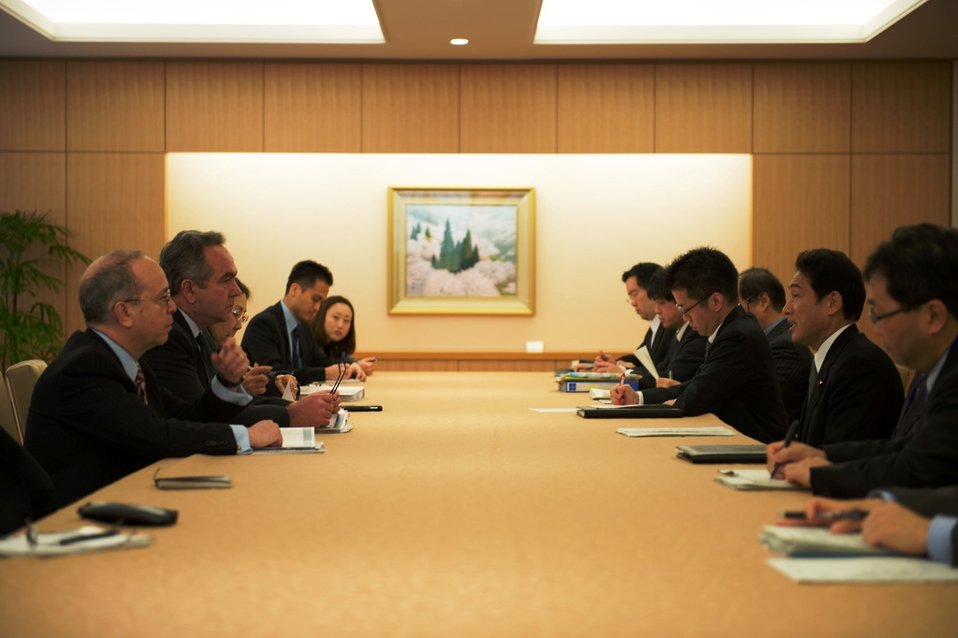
Assistant Secretary Campbell and National Security Council Senior Director Russel Meet With Japanese Foreign Affairs Minister Kishida

Assistant Secretary of State for East Asian and Pacific Affairs Kurt M. Campbell and National Security Council Senior Director for Asian Affairs Daniel Russel participate in a meeting with Japanese Foreign Minister Fumio Kishida at the Ministry of Foreign Affairs in Tokyo, Japan, January 17, 2013.